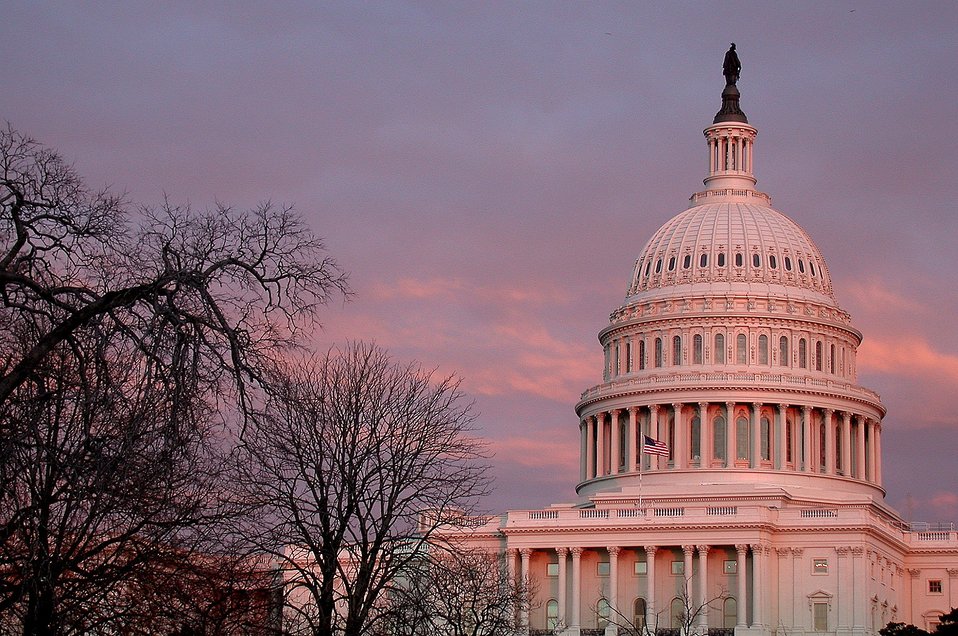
United States Capitol building.